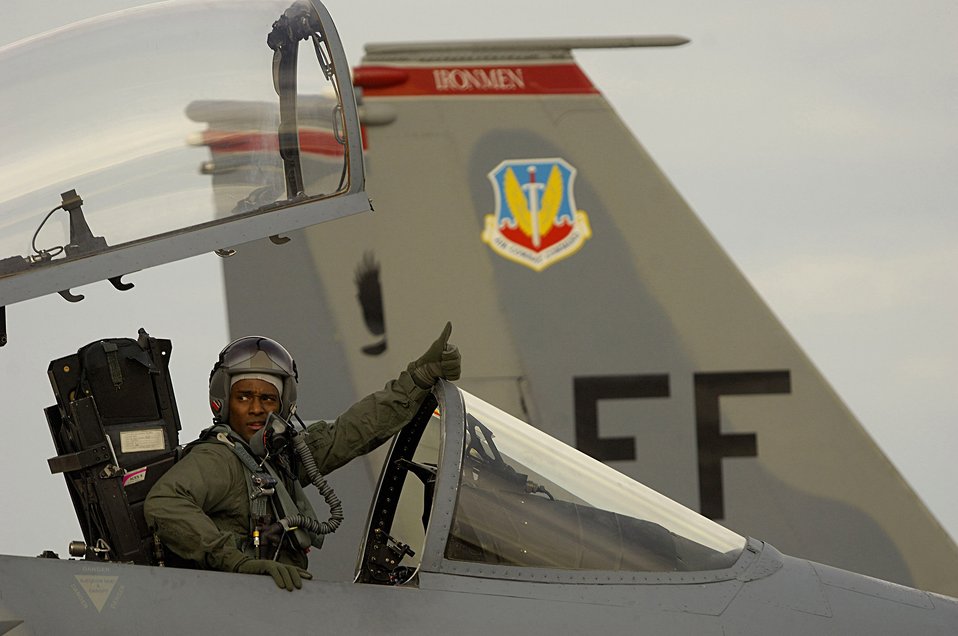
We're back in the air!

Capt. Glenn Gonzales, an F-15 Eagle pilot with the 71st Fighter Squadron at Langley Air Force Base, Va., checks to see if Lt. Col. Robert Garland, 71st FS commander, is ready to start engines Jan. 9. After a month-long stand-down, the 71st launched the first of their F-15C fleet Jan. 9 at 9:30 a.m.